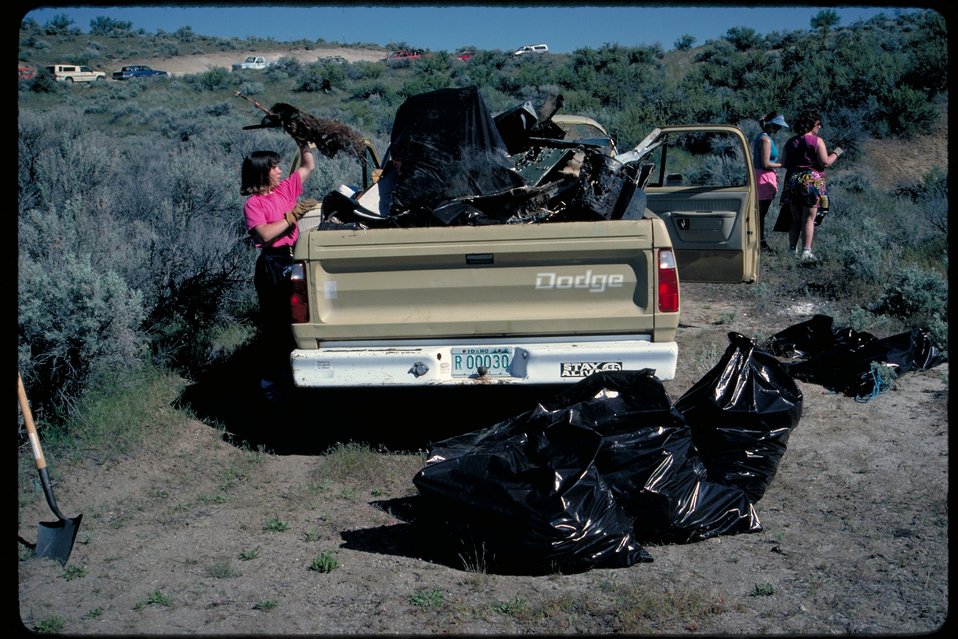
Volunteer Cleanup Boise Front Four Rivers Field Office LSRD Lower Snake River District